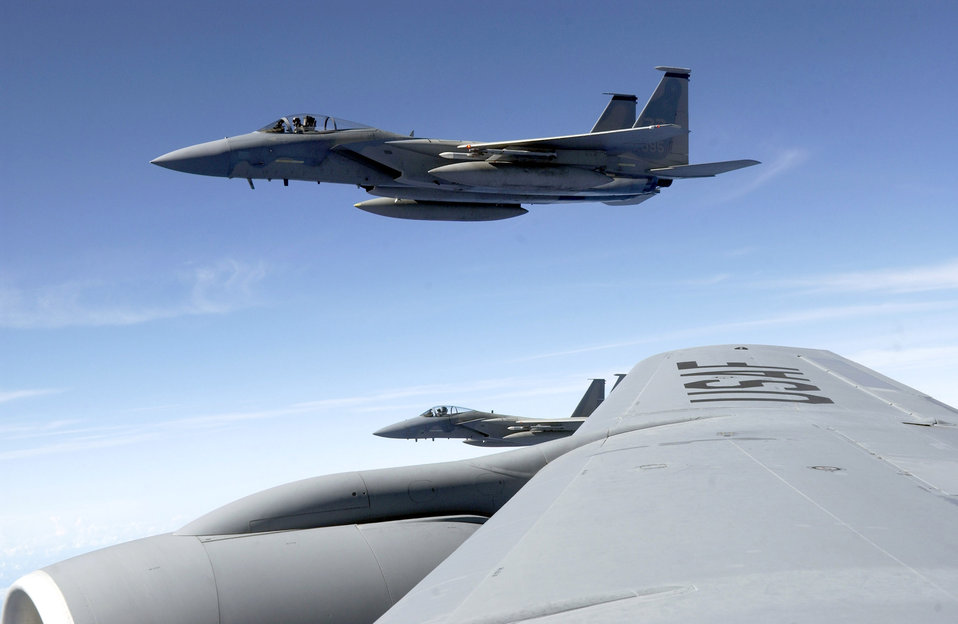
Valiant Shield gas station

An F-15 Eagle flies alongside a KC-135 Stratotanker during Exercise Valiant Shield Aug. 9 at Andersen Air Force Base, Guam. The F-15 is from the 44th Fighter Squadron at Kadena Air Base, Japan, and the KC-135 is from the New Hampshire Air National Guard. During the exercise, Air Force aircraft and Airmen from stateside bases and Kadena AB will comprise part of an expeditionary air wing based at Andersen AFB. These forces will participate in integrated joint training with Navy and Coast Guard forces.